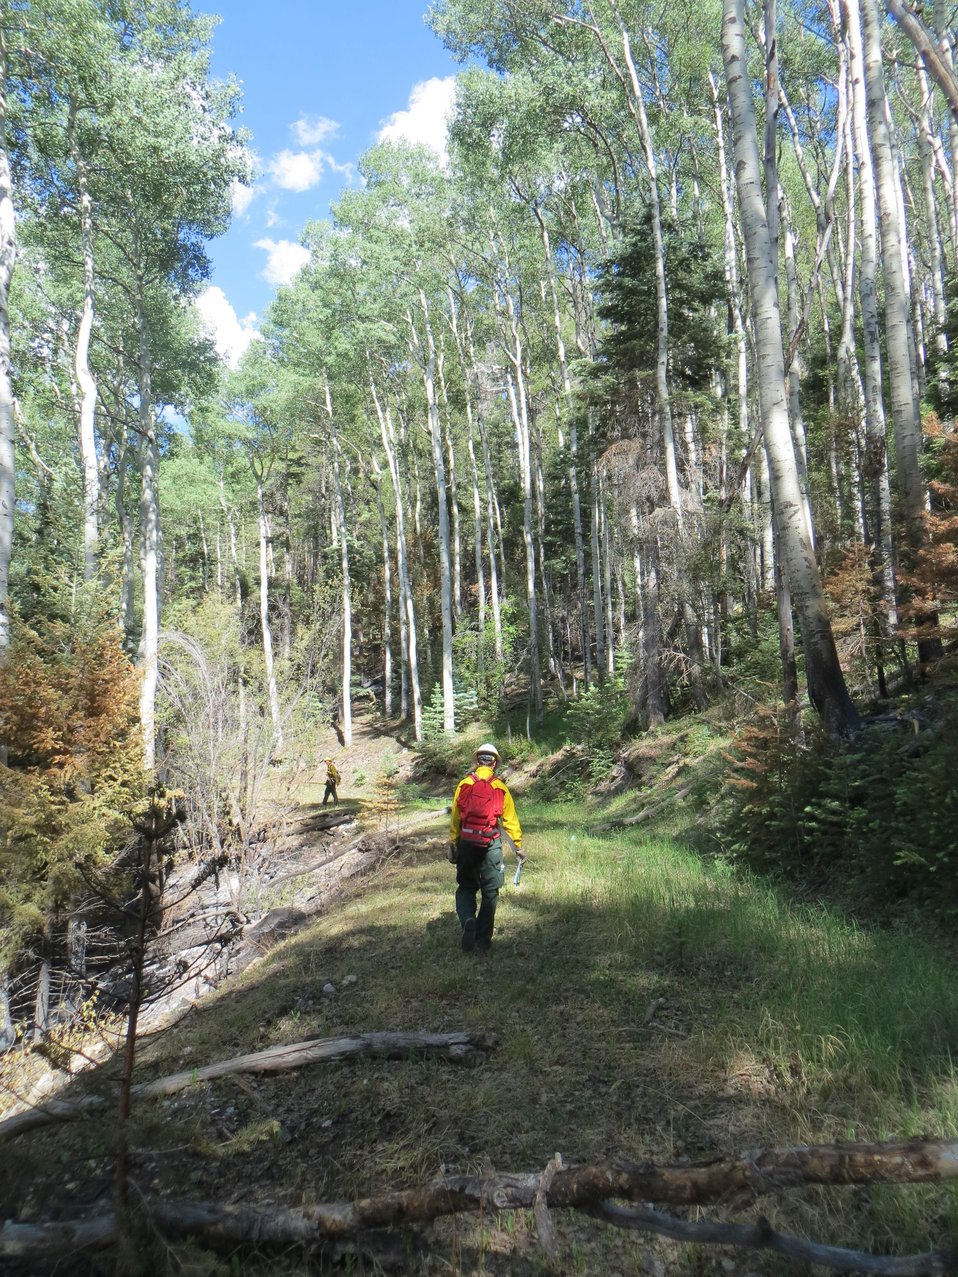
Burned Area Emergency Response (BAER) assessment teams examine the burned out areas at the Thompson Ridge Fire in the Sante Fe National Forest approximately 10 miles north of Jemez, NM. The fire began on May 31, 2013 by human ignition has consumed over 29, 903 acres. BAER teams are comprised of specialists that are highly experienced in conducting rapid watershed assessments and analyses and may include soil scientists, hydrologists, geologists, biologists, geographic information system specialists, archeologists, botanists, silviculturists, and civil engineers. (Silvaculturists are individuals that specialize in the care and cultivation of forest trees).